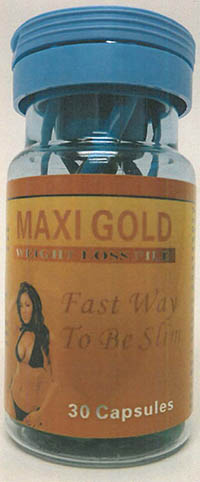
RECALLED – Dietary Supplement

March 25, 2014 – Product Recall – New Life Nutritional Center Issues Voluntary Nationwide Recall of Super Fat Burner, Maxi Gold and Esmeralda Dietary Supplements Due to the Presence of Undeclared Sibutramine and Phenolphthalein.